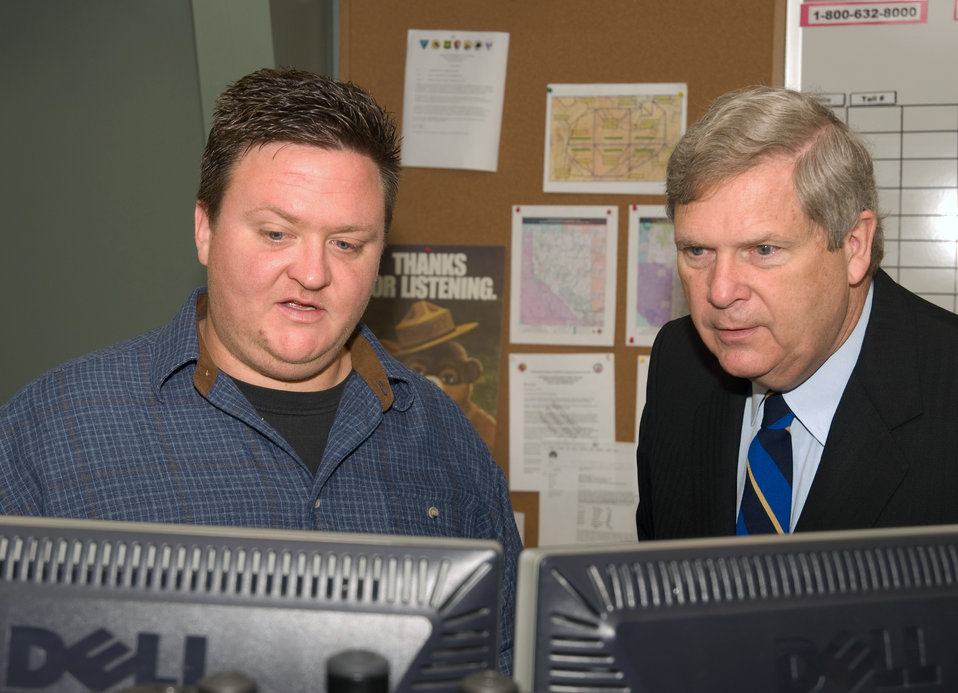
Agriculture Secretary Tom Vilsack tours the National Interagency Fire Center (NIFC) in Boise, ID on Monday, May 13, 2013. Agriculture Secretary Vilsack and Interior Secretary Jewell provided an outlook for the upcoming fire season and outlined the federal government’s efforts to ensure collaboration in protecting Americans from wildfire.